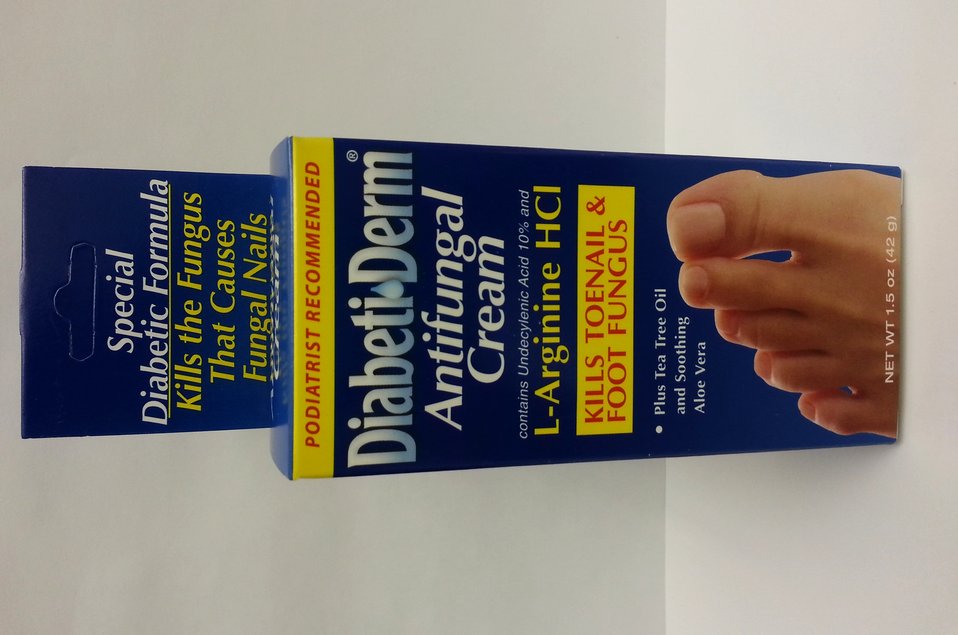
Illegally Sold Diabetes Treatments - Diabeti-Derm Antifungal Cream

This product is an external analgesic over-the-counter (OTC) unapproved new drug promoted specifically for secondary conditions of diabetes. FDA warns consumers to avoid illegally sold and potentially unsafe products sold as treatments for diabetes.